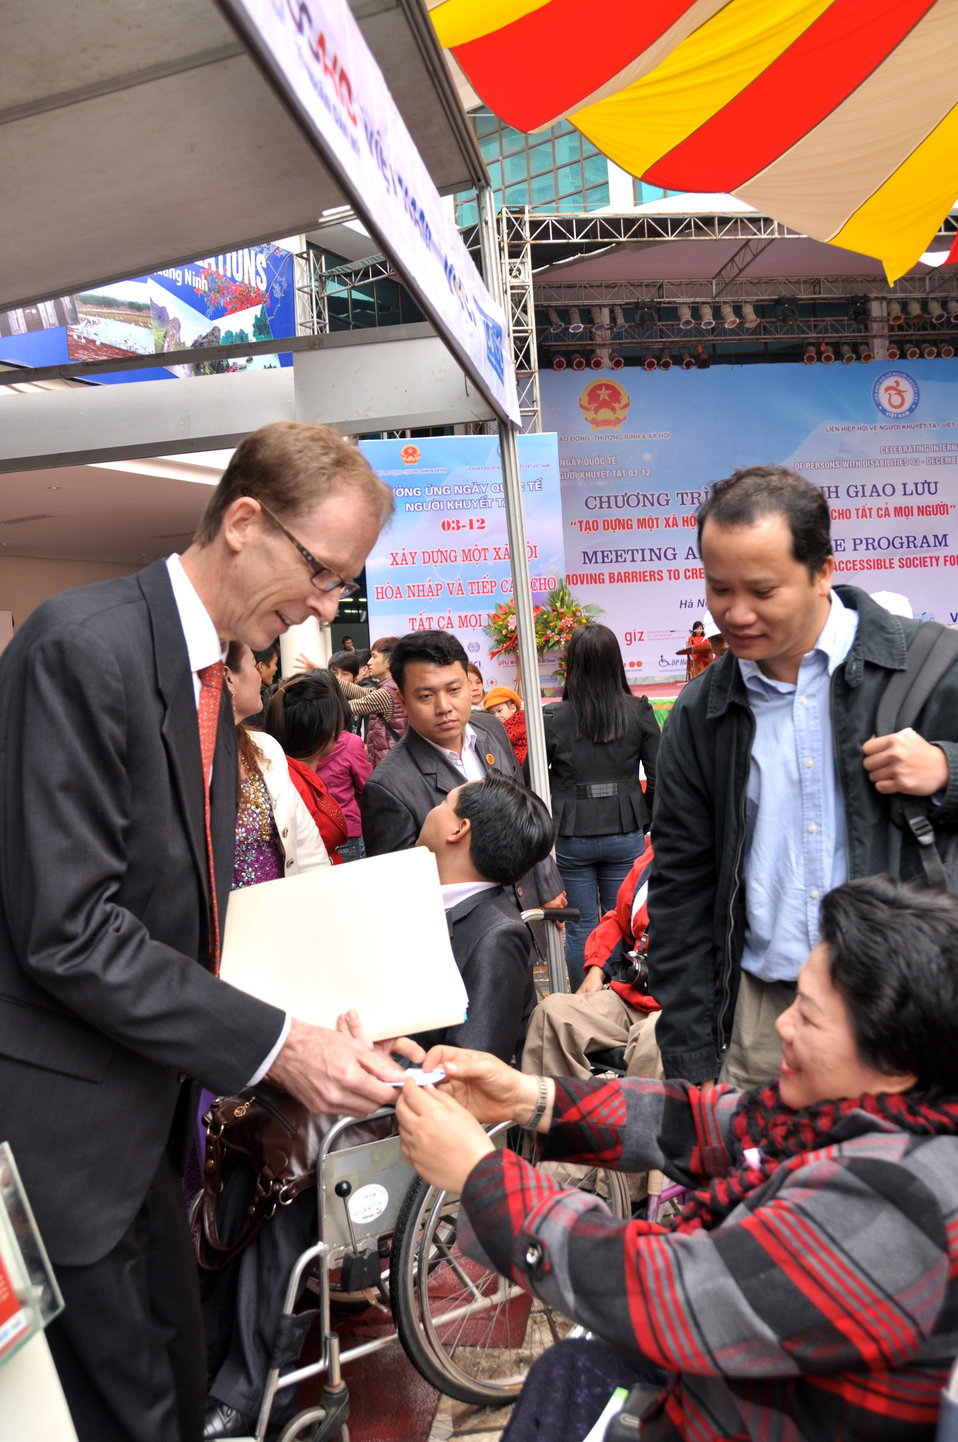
USAID Mission Director Joakim Parker joins celebration of International Day of Persons with Disabilities in Hanoi, Vietnam

December 2, 2012